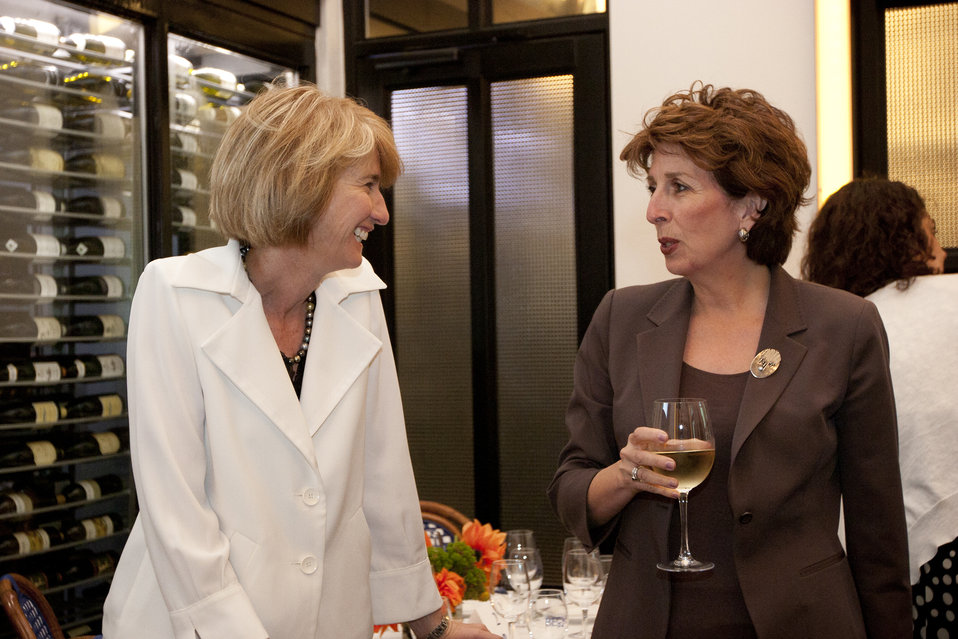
WomenandEnergy 08